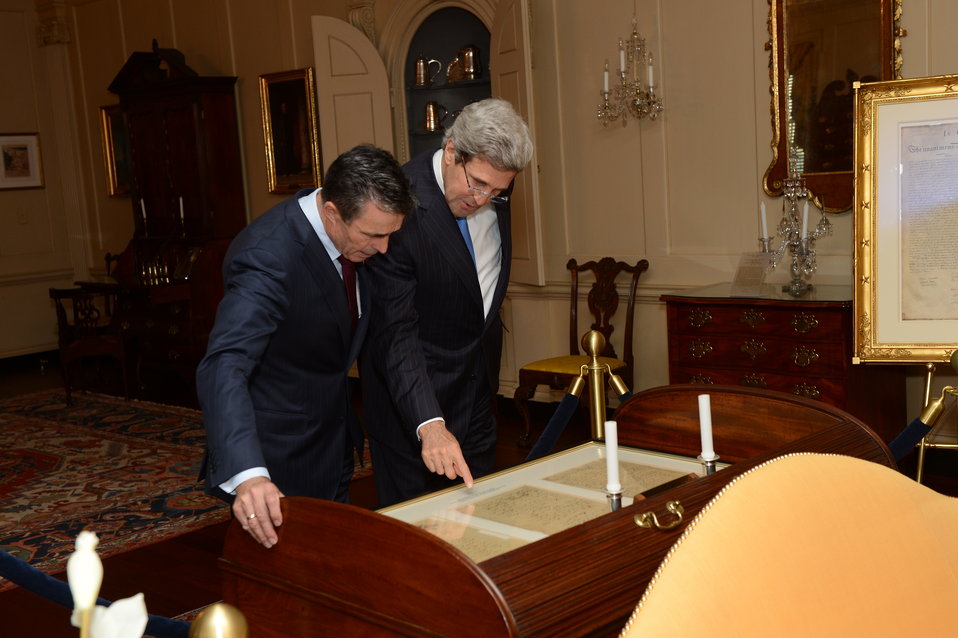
Secretary Kerry Shows NATO Secretary General Rasmussen the Desk on Which the Treaty of Paris Was Signed

U.S. Secretary of State John Kerry shows NATO Secretary General Anders Fogh Rasmussen the desk on which the Treaty of Paris was signed in 1783 in the John Quincy Adams State Drawing Room at the U.S. Department of State in Washington, D.C., on May 30, 2013.